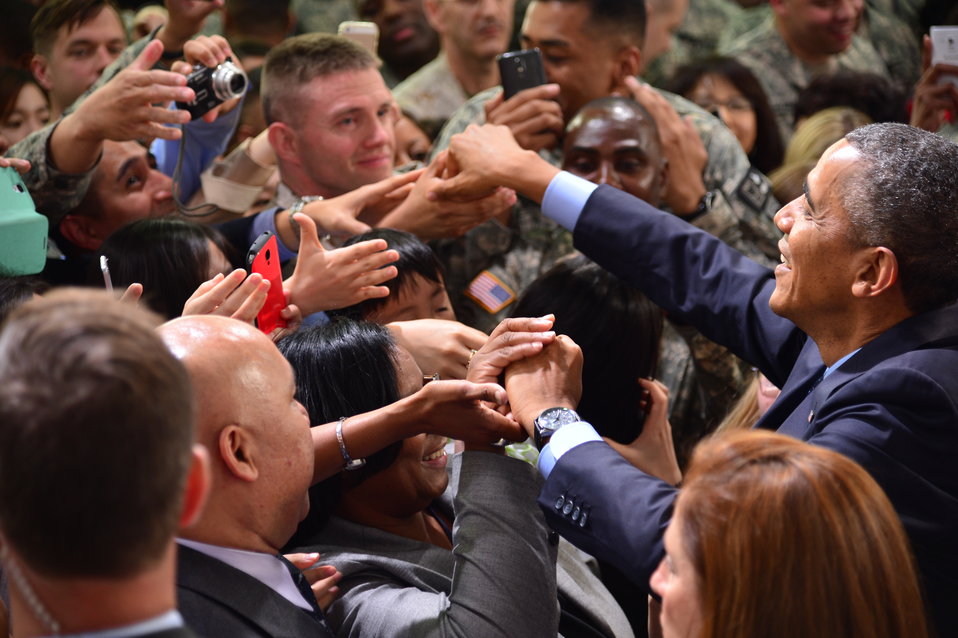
President Obama Delivers Remarks at a Combined Forces Command Briefing

President Barack Obama delivers remarks at a Combined Forces Command Briefing at Yongsan Garrison in Seoul, Republic of Korea on April 26, 2014.